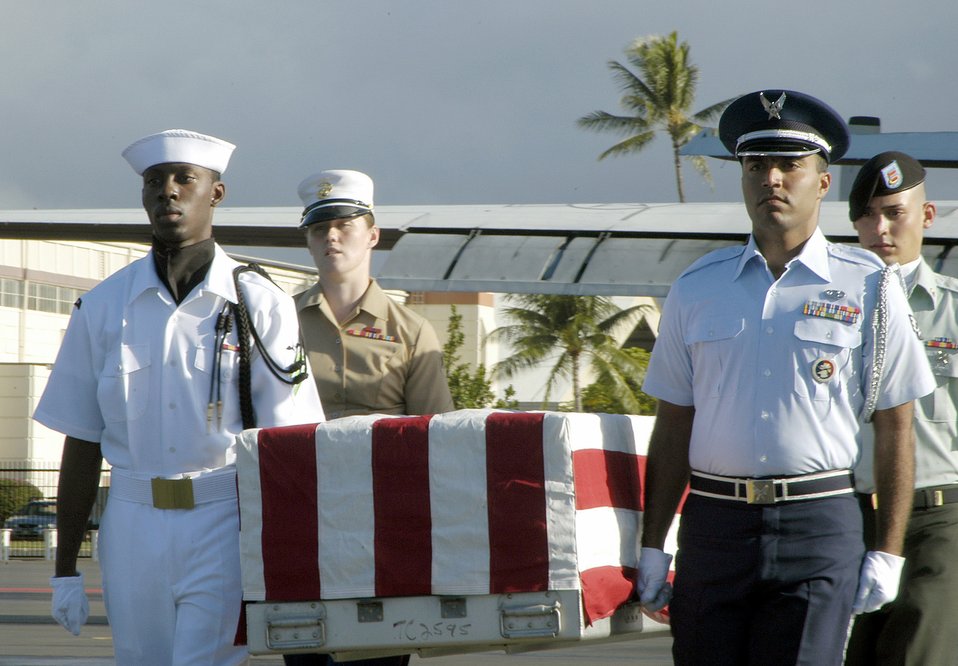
Coming home

HICKAM AIR FORCE BASE, Hawaii (AFPN) - A joint honor guard moves the remains of a Vietnam War veteran during a repatriation ceremony here. The Joint POW/MIA Accounting Command held the ceremony Dec. 9. The remains were recovered last month by a JPAC team.